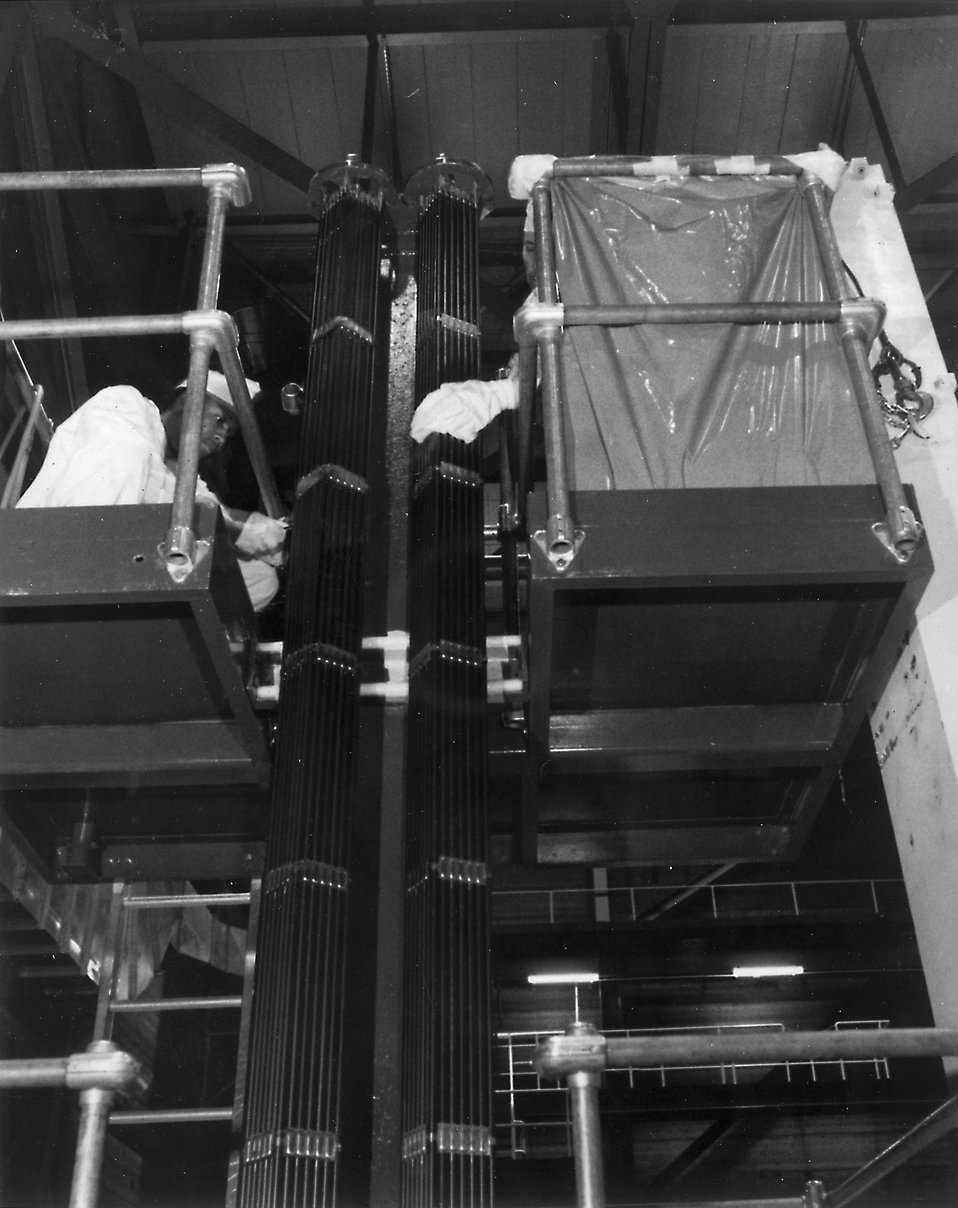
Technician prepares fuel bundles for loading at the Niagara Mohawk Power Corporation's Nine Mile Point Nuclear Station, six miles east of Oswego, New York on Lake Ontario. Circa 1970.